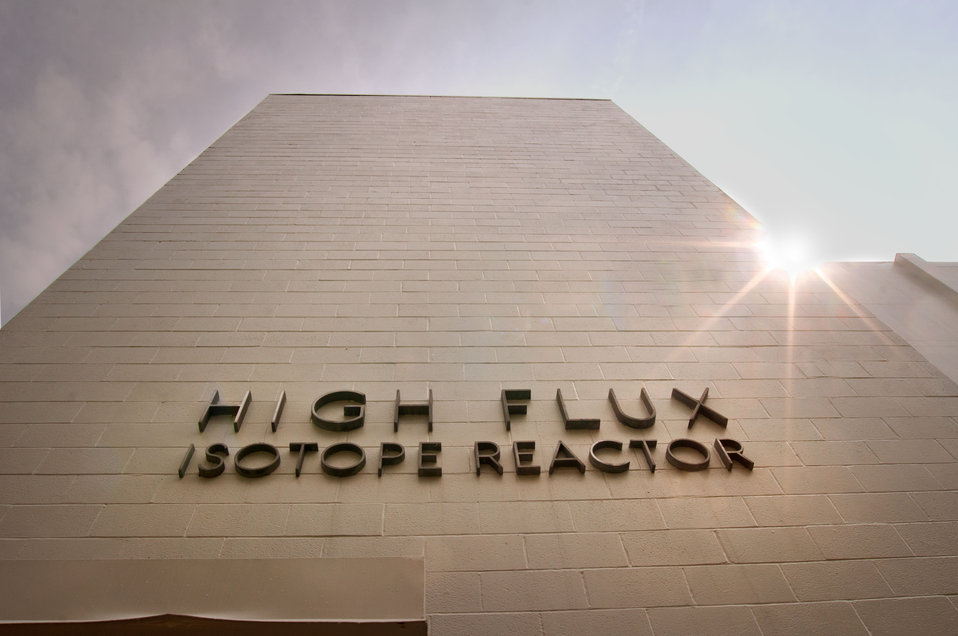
HFIR High Flux Isotope Reactor Oak Ridge

DOE photo Lynn Freeny
HFIR High Flux Isotope Reactor Oak Ridge National Lab. Oak Ridge Tennessee 2011